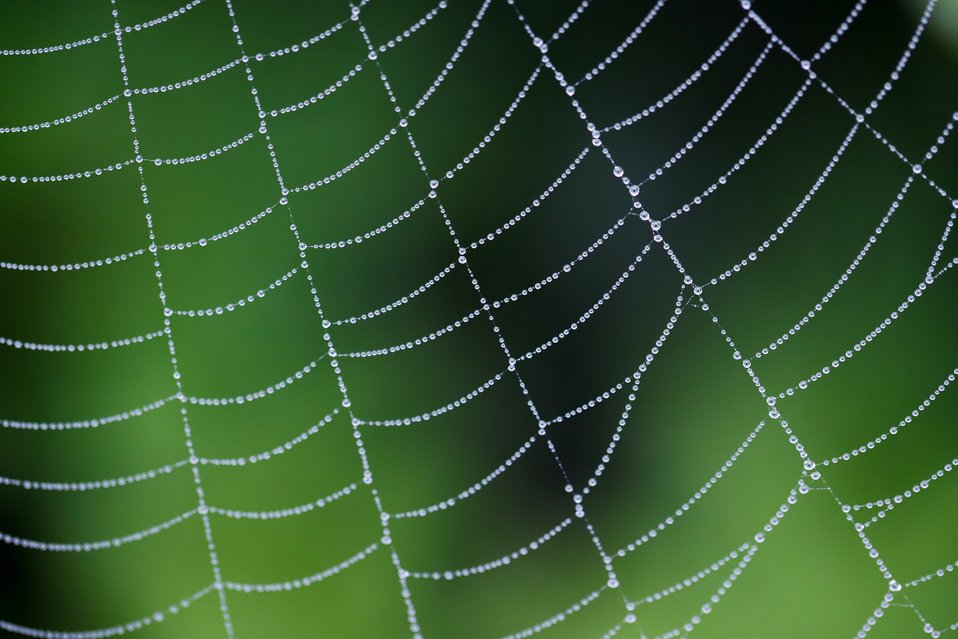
Dew on a spider web on green background.